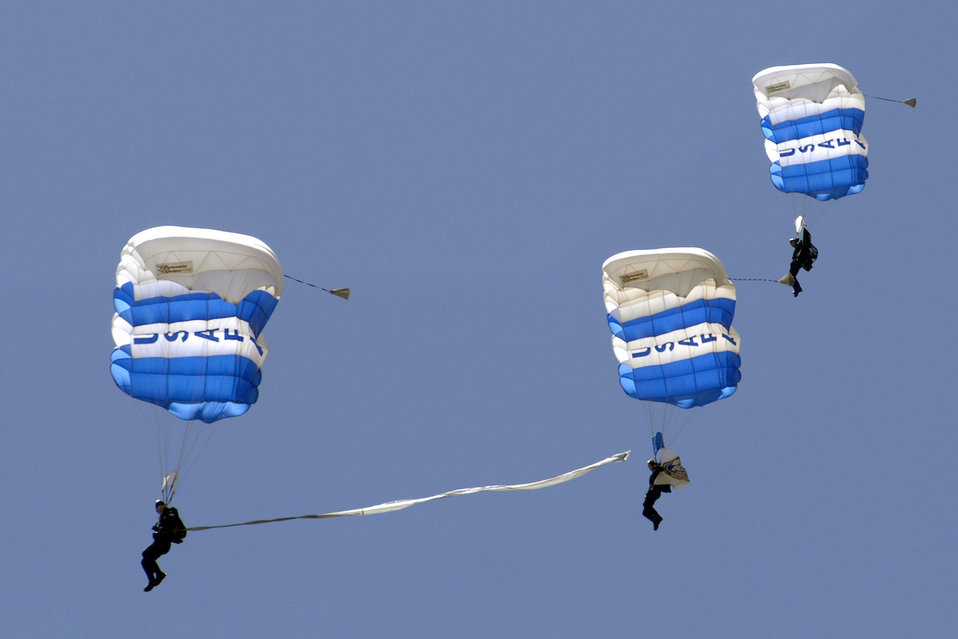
Wings of Blue

Members of the U.S. Air Force Academy's Wings of Blue Parachute team maneuver their canopies toward successful landings in the Academy's cadet area in Colorado May 6. The team performed a demonstration jump during the afternoon meal formation in front of the entire cadet wing and Academy visitors.